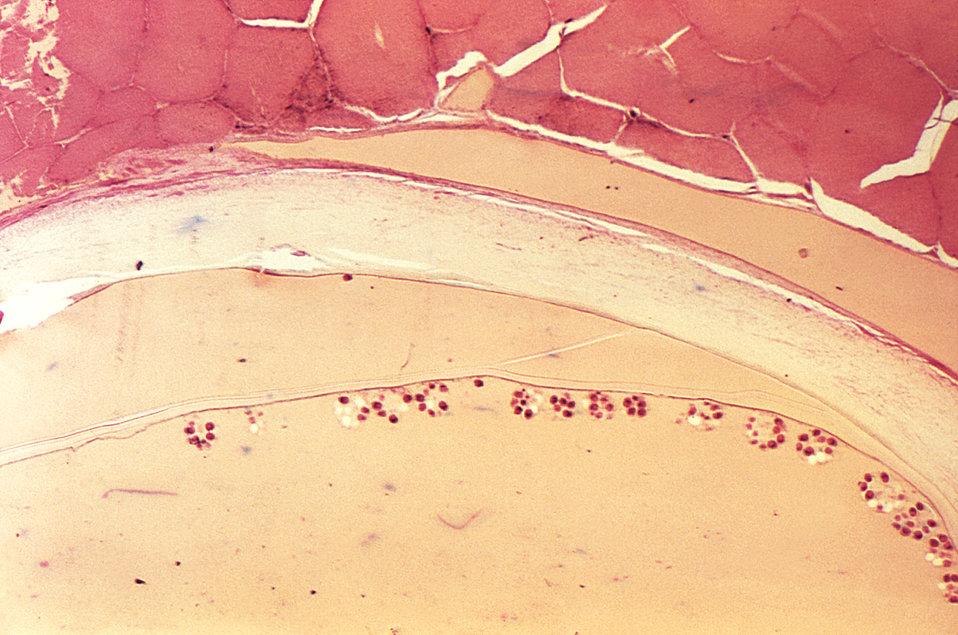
Under a low magnification of only 10X, this photomicrograph revealed some of the ultrastructural morphology seen in a cut section of an Echinococcus sp. hydatid cyst. During their life cycle within the host, these tapeworms pass through an egg stage, followed by an oncosphere-stage, which is followed by the formation of a cystic stage, resulting in this hydatid cyst. Rupture of these cysts releases the larval protoscolices, and a condition known as 'hydatid sand'.